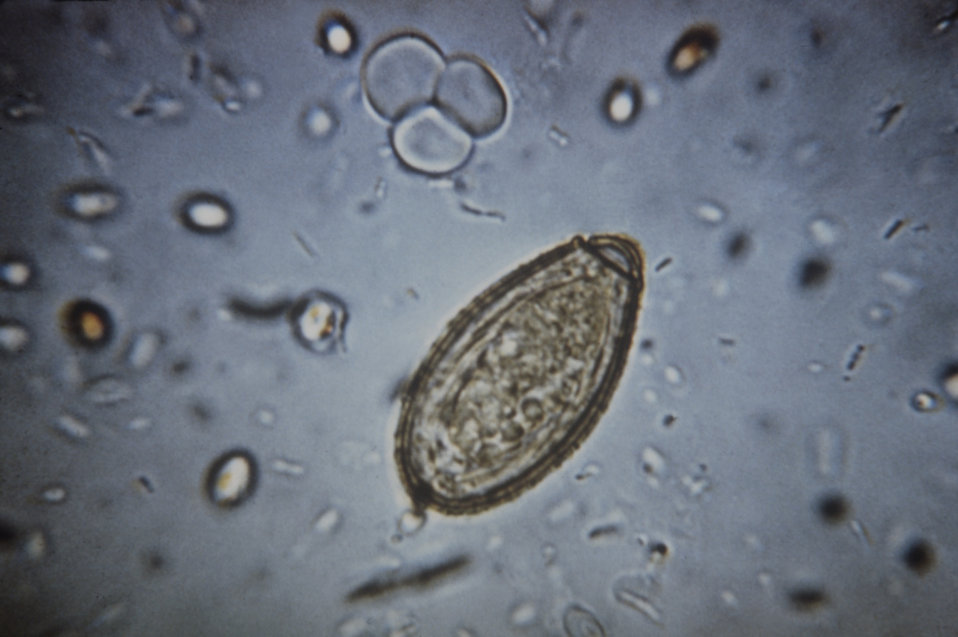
This micrograph depicts an egg of the parasitic trematode, or flatworm, Clonorchis sinensis.